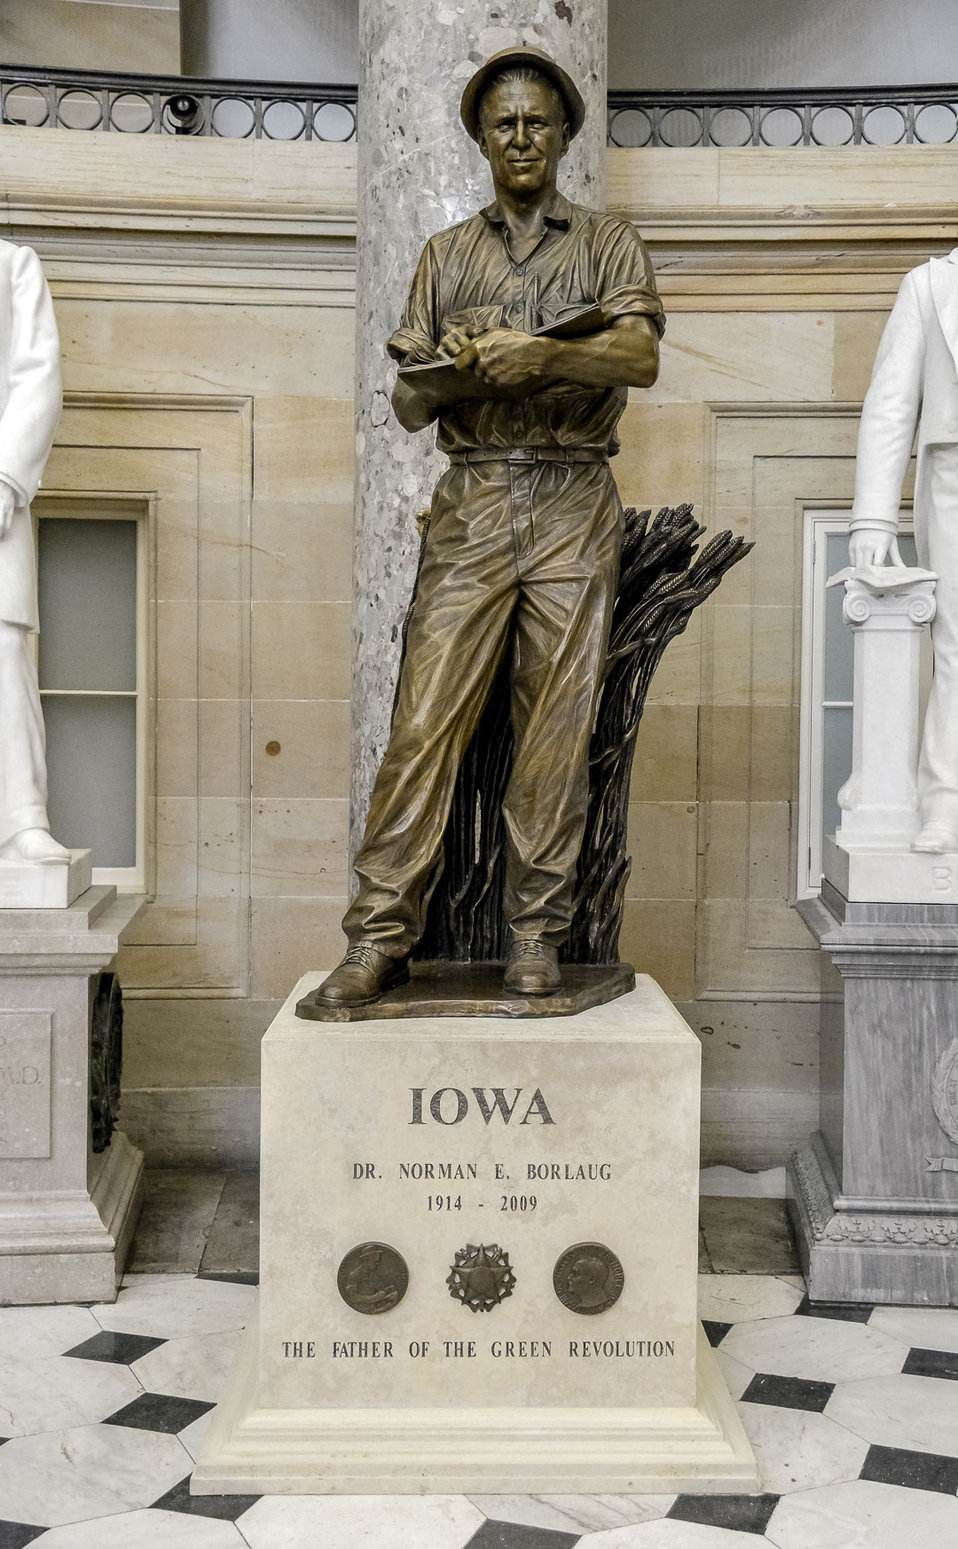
Dr. Norman E. Borlaug

This statue of Dr. Norman E. Borlaug was given to the National Statuary Hall Collection by Iowa in 2014.